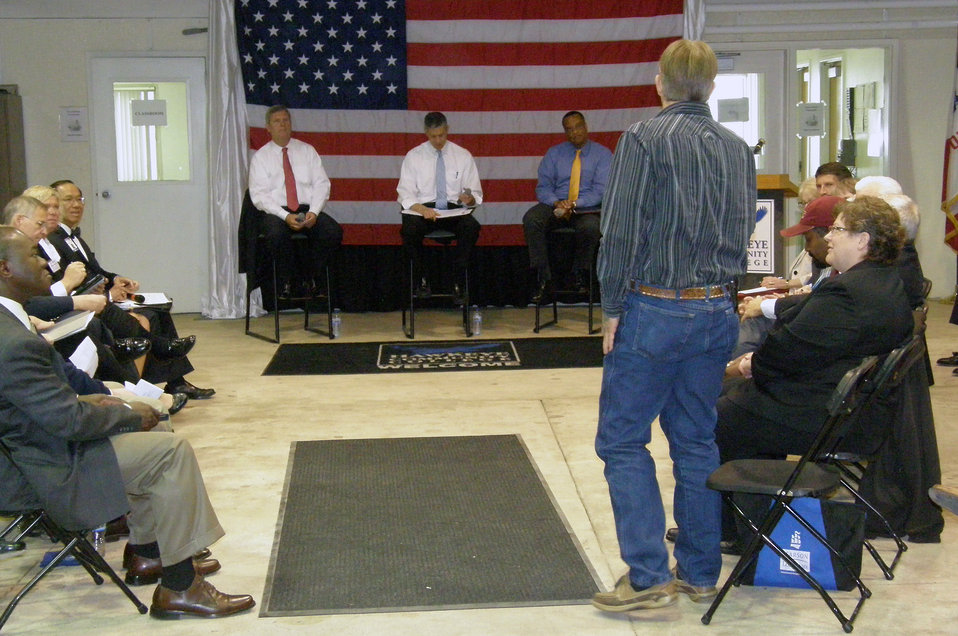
Agriculture Secretary Tom Vilsack spoke to audiences in Waterloo and Cedar Rapids, IA on Thursday, April 19, 2012, where he highlighted the importance of agriculture and rural America to the economic recovery and strength of the nation. Ranchers and growers are some of America’s greatest assets and are responsible for one out of every 12 jobs. Secretary Vilsack highlighted ways the U.S. Department of Agriculture (USDA) and the Obama Administration have worked to improve the lives of rural Americans and increased growth in the agricultural economy over the past three years. USDA has developed new markets at home and abroad while continuing to maintain a strong safety net, invested in conservation and research, and encouraged the next generation of farmers.